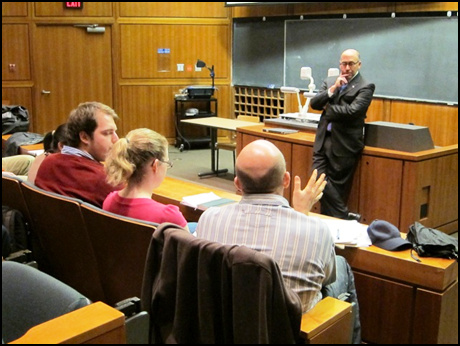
Ambassador Jacboson Speaks With Canadian University Students

U.S. Ambassador to Canada David Jacobson speaks with American Studies students in Vancouver, Canada, in October 2010.